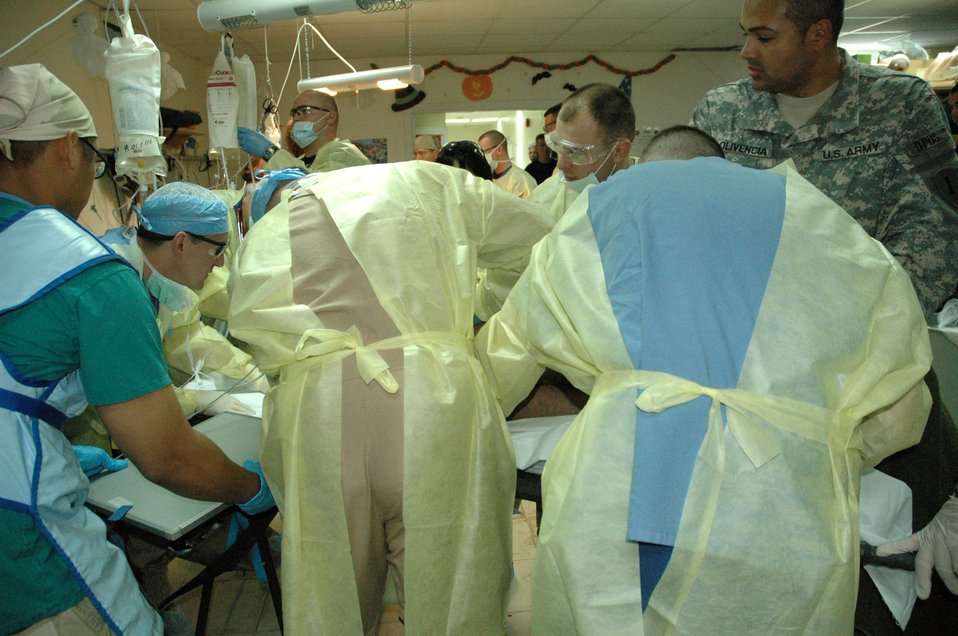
Saving lives, right here, right now

The 506th Expeditionary Medical Squadron staff cares for two patients who were injured by an improvised explosive device while on patrol Oct. 18.